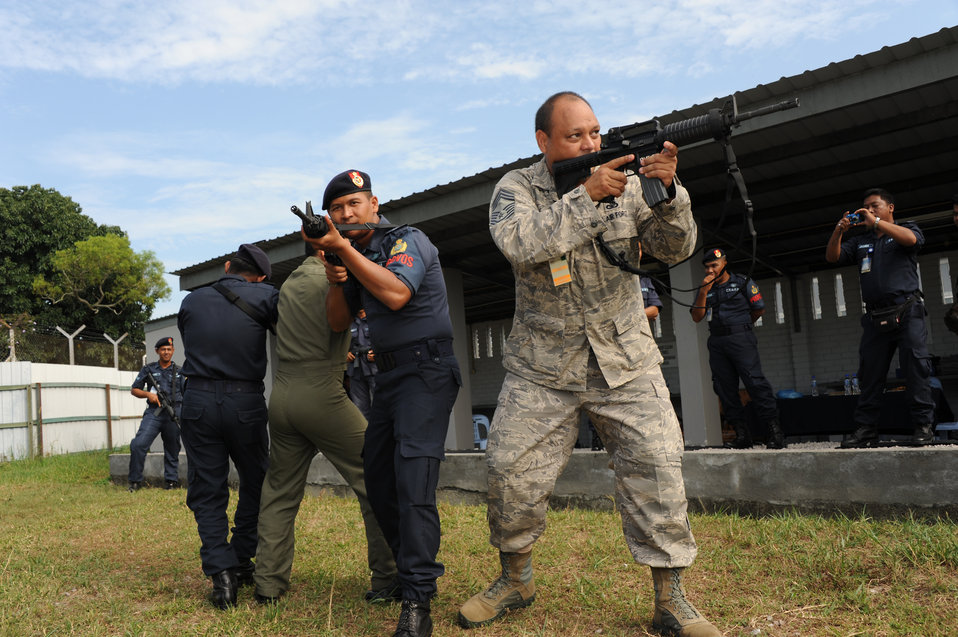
Cope Taufan 2012

Chief Master Sgt. William Makaneole, a Pacific Air Forces plans and programs project officer, leads Royal Malaysian Air Force airmen from Provost Squadron 104 in a stack formation during a subject matter expert exchange at Cope Taufan 2012 at TUDM Butterworth on April 5, 2012.